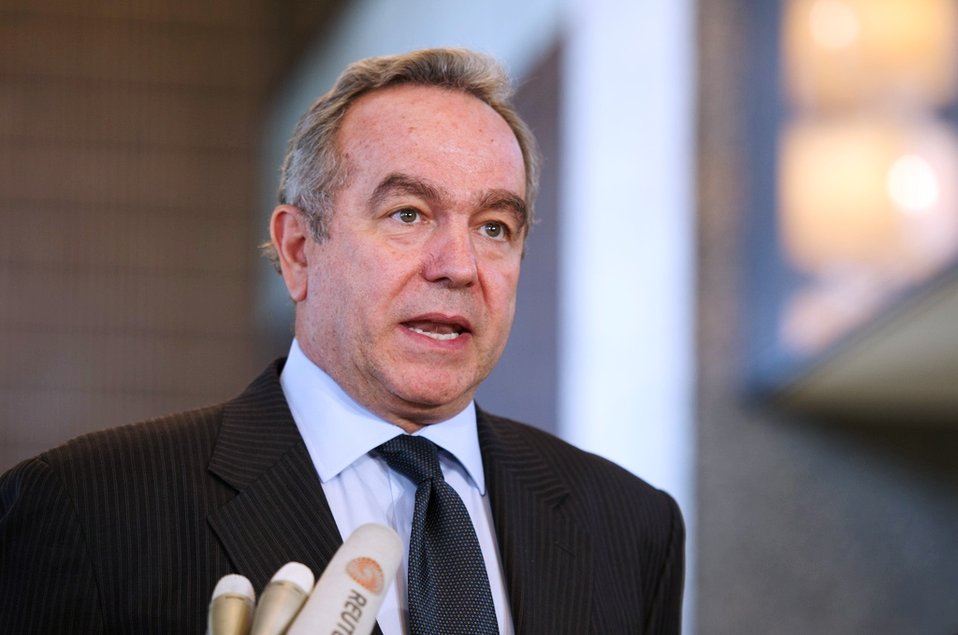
Assistant Secretary Campbell Addresses Reporters

Assistant Secretary of State for East Asian and Pacific Affairs Kurt M. Campbell addresses the Tokyo media at the Ministry of Foreign Affairs in Tokyo, Japan, January 17, 2013.